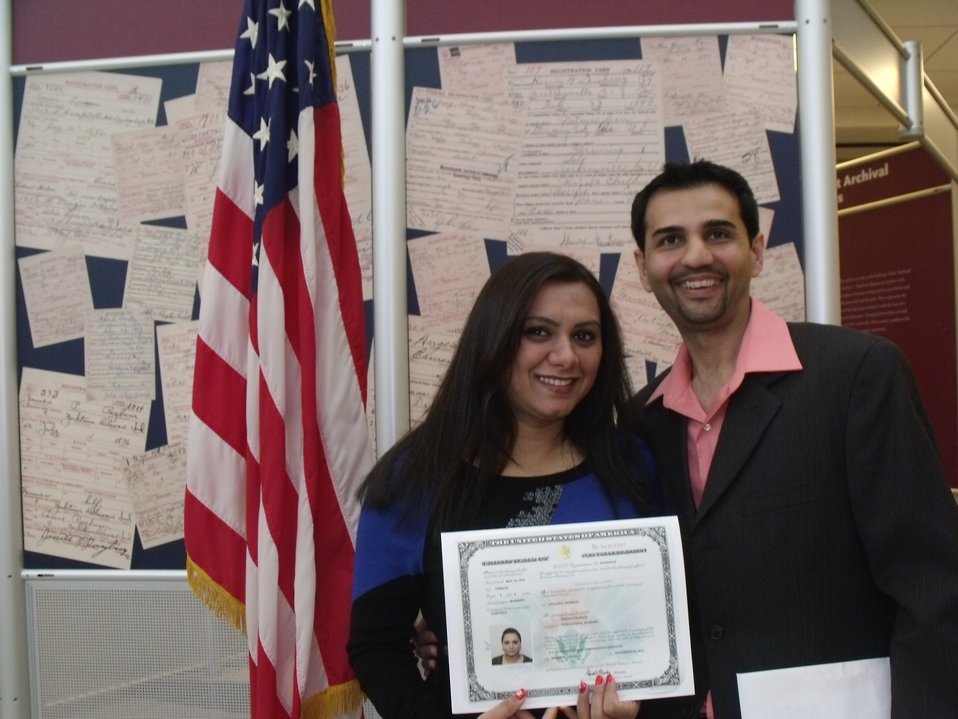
New Citizens